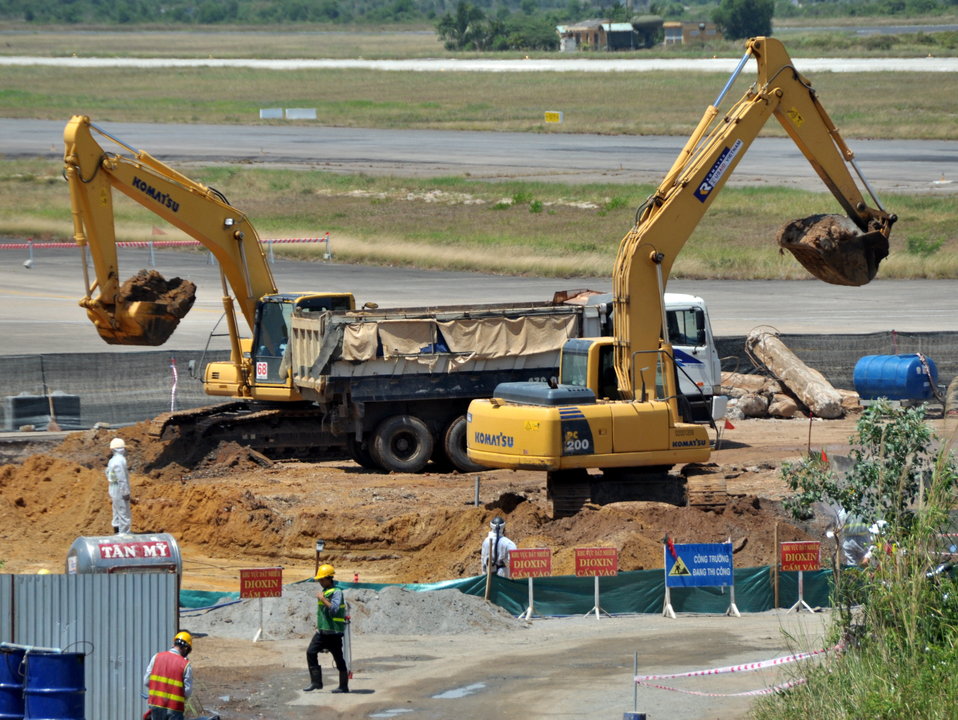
Environmental Remediation Progress at the Danang Airport site

Progress at the Remediation of Dioxin Contamination Project Site

Danang, Vietnam, June 5, 2013